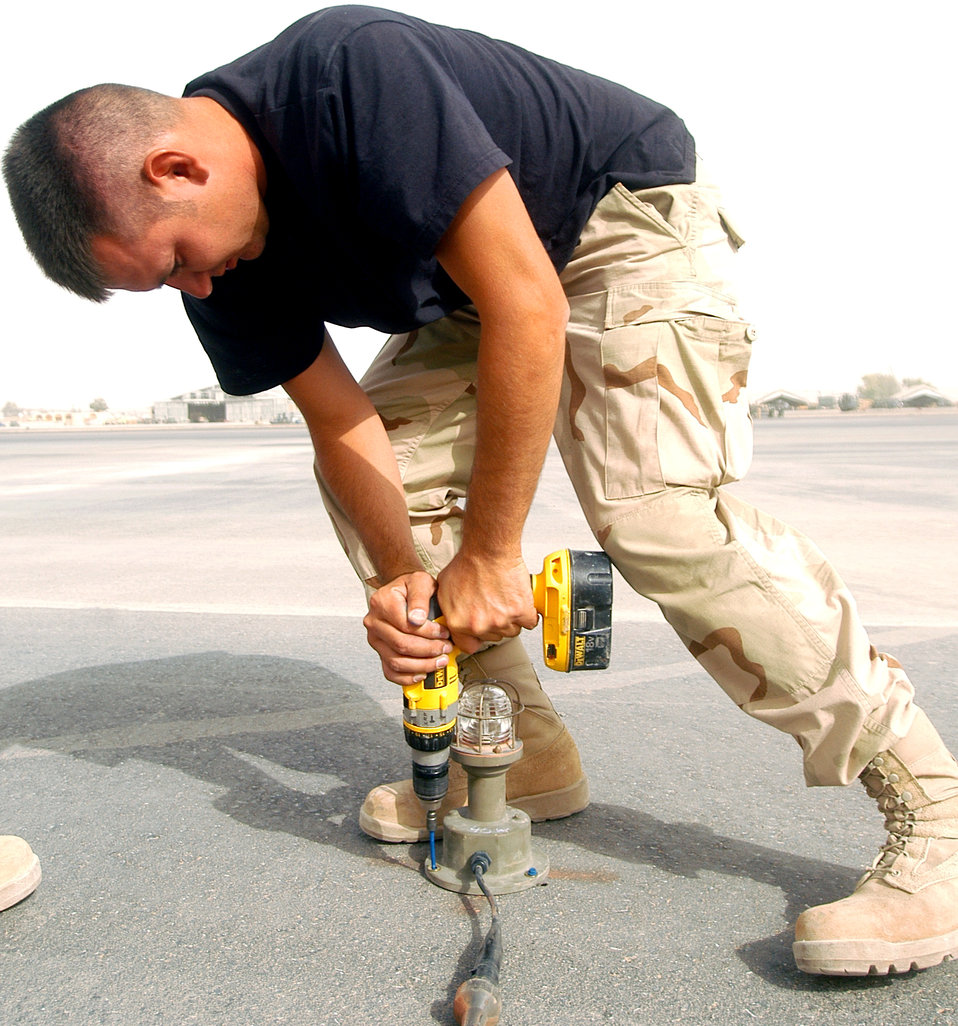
Red Horse keeps planes landing at Kandahar

Senior Airman Joshua Williams tightens down a runway light at Kandahar Airfield, Afghanistan, on Sunday, June 4. Airman Williams is deployed for Operation Enduring Freedom from the 819th Red Horse Squadron at Malmstrom Air Force Base, Mont. He is an electrician with the 1st Expeditionary Red Horse Group.